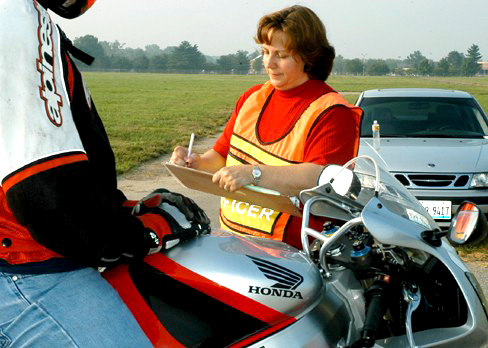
Safety officials help curb motorcycle fatalities

SCOTT AIR FORCE BASE, Ill. -- Marilee Reuter follows a checklist while inspecting a motorcyclist who came through the base gate here recently. The safety office, along with security forces Airmen, conducted the inspections in an effort to lower motorcycle mishaps. Ms. Reuter is the 375th Airlift Wing's ground safety manager.